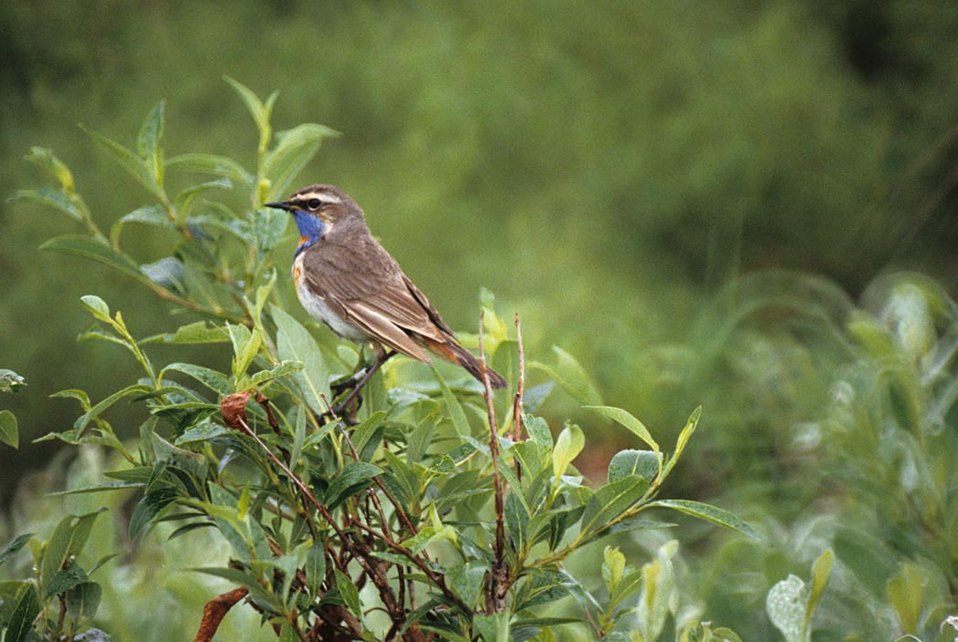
Bluethroat male

The Bluethroat is one of the smallest members of the Thrush family measuring 5.5 (14 cm) inches in length. The colorful blue throat pattern distinguishes this breeding male from other species. Nests are found on the tundra in thickets near water.